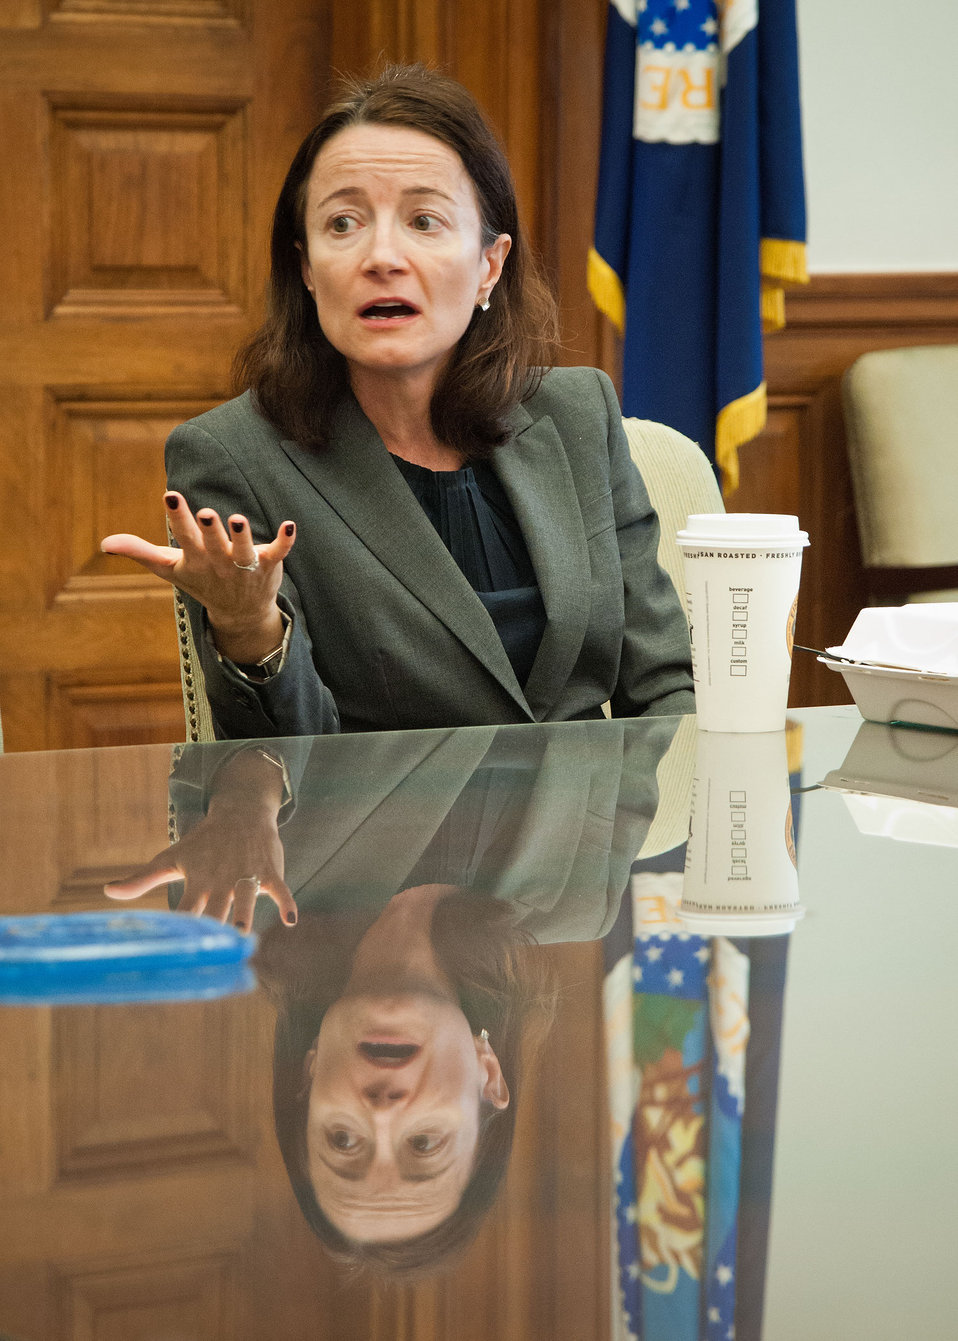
U.S. Department of Agriculture (USDA) Rural Development (RD) Rural Utilities Service (RUS) Deputy Administrator Jessica Zufolo had the opportunity with other USDA employees to discuss the roles they play within the Department at a Brown Bag Lunch held with Agriculture Secretary Tom Vilsack in Washington, D.C. on Wednesday, Sept. 26, 2012. Secretary Vilsack holds the occasional Brown Bag Lunches to gain information and knowledge to assist in the administration of the affairs and programs of the Department, and to thank the employees for their diligent work to the Department and as public servants.